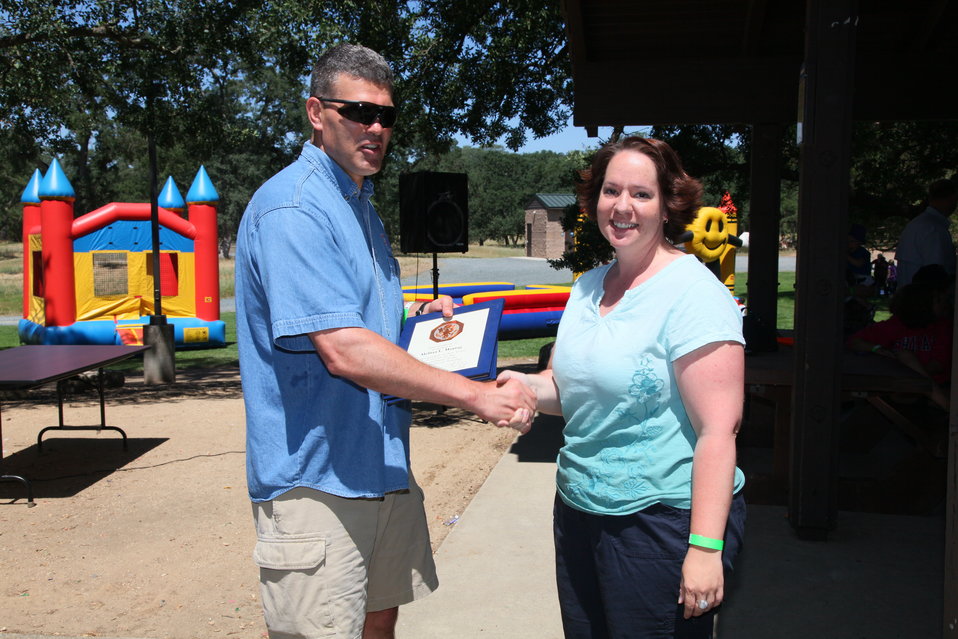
2011 Annual Picnic